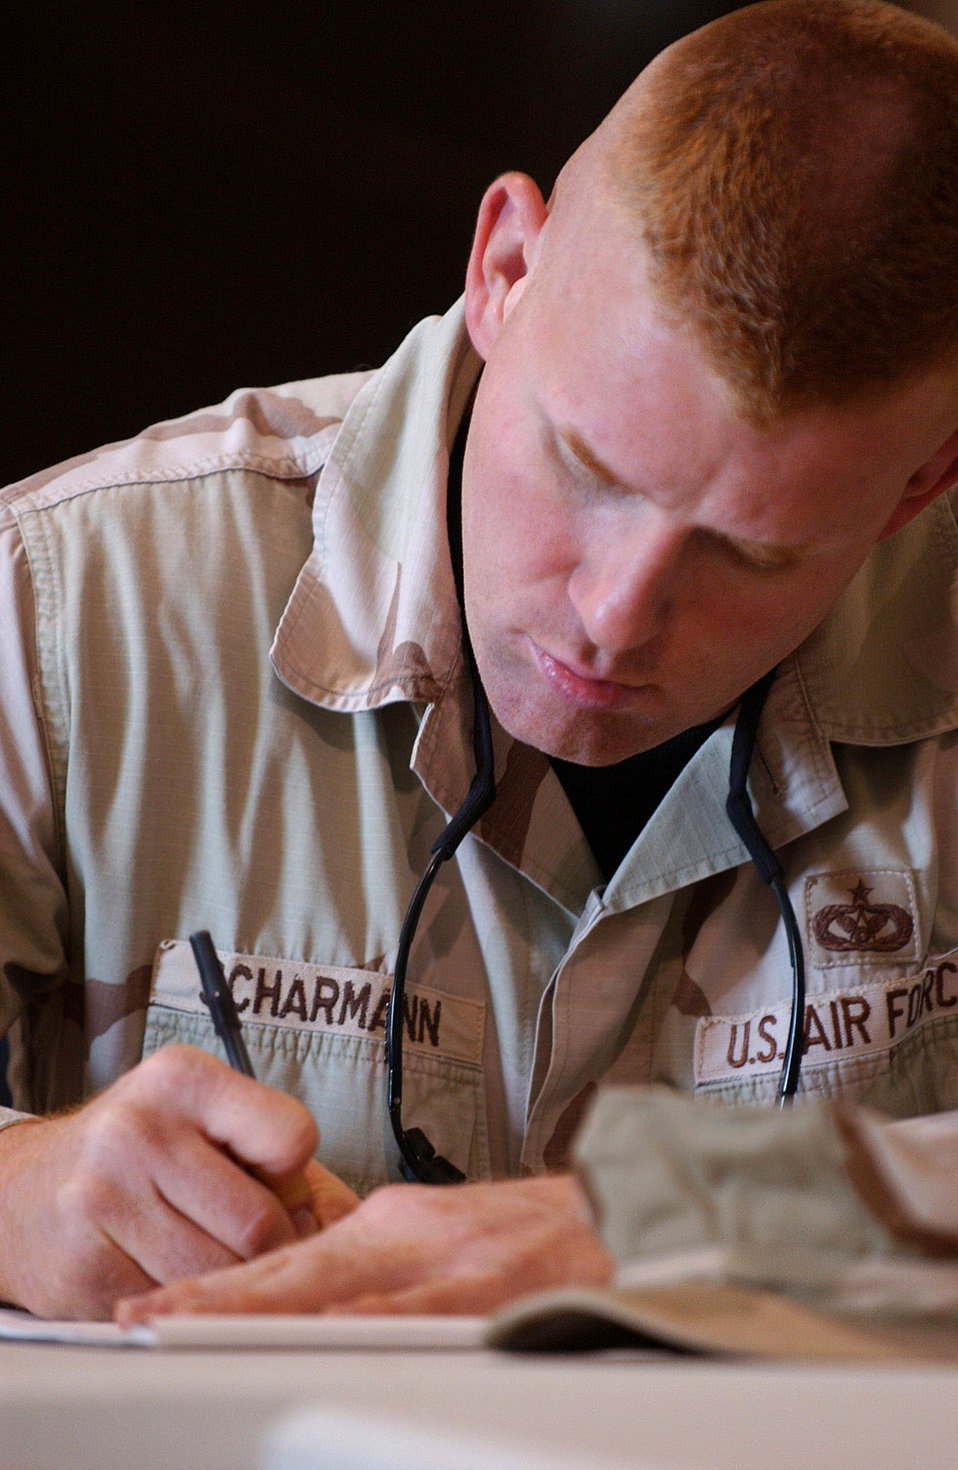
Senior NCOs mentor junior sergeants in Iraq

Staff Sgt. Jeffrey Scharmann takes notes during the Senior NCO Mentorship Seminar Dec. 8 at Ali Base, Iraq. The Top 3 Council hosted a Senior NCO Mentorship Seminar for mid-tier enlisted Airmen. Sergeant Scharmann is assigned to the 407th Expeditionary Civil Engineer Squadron and is deployed from Kadena Air Base, Japan.